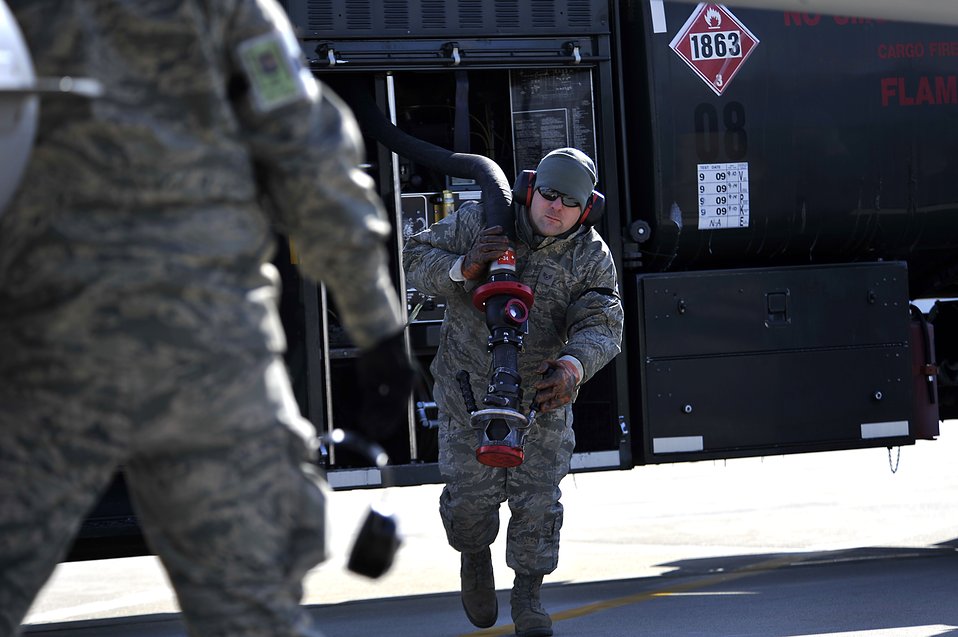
Ohio Air National Guard Base fuels test

Staff Sgt. Chad Lavigne prepares to refuel an F-16 Fighting Falcon Feb. 12, 2012, at the Ohio Air National Guard Base. The F-16 is a part of the field service evaluation for biofuel operations. Lavigne is a fuels specialist assigned to the 180th Mission Support Group.